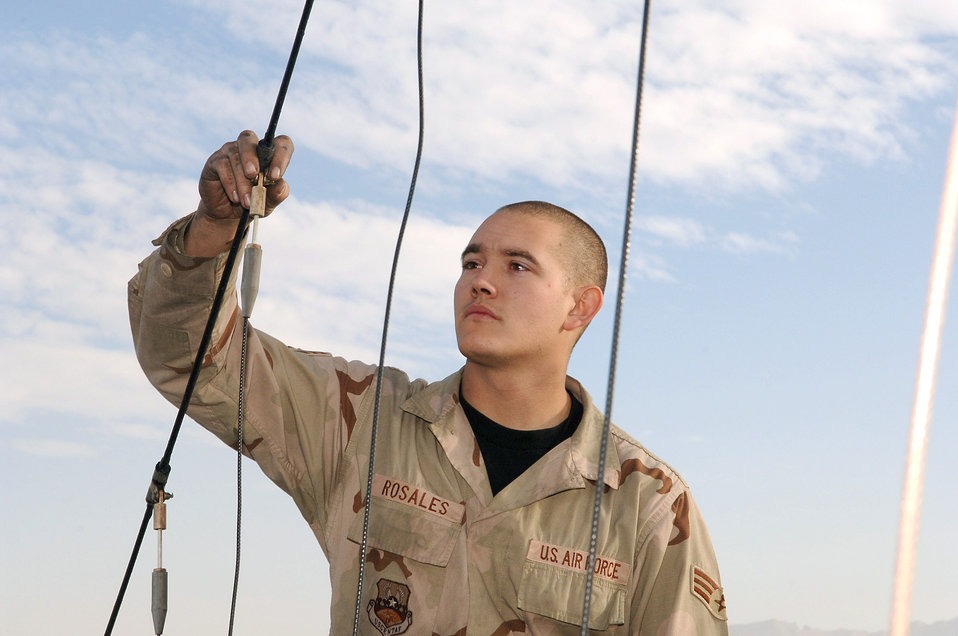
Looking for the

BAGRAM AIR BASE, Afghanistan (AFPN) -- Senior Airman Alexander Rosales inspects antennae elements for fraying on an EC-130H Compass Call's. Airman Rosales is with the 41st Expeditionary Electronic Combat Squadron and deployed from Davis-Monthan Air Force Base, Ariz.